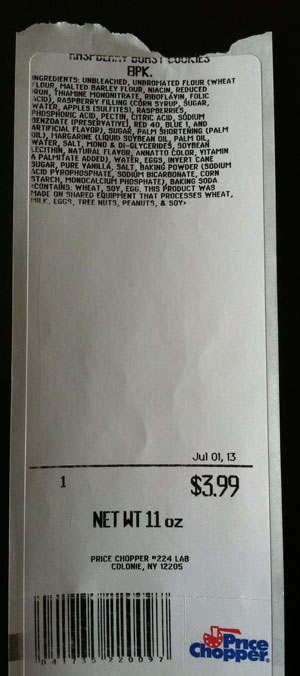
RECALLED - Cookies

June 25, 2013 – Product Recall – Price Chopper Voluntarily Recalls 3 Varieties of Burst Brand Cookies.